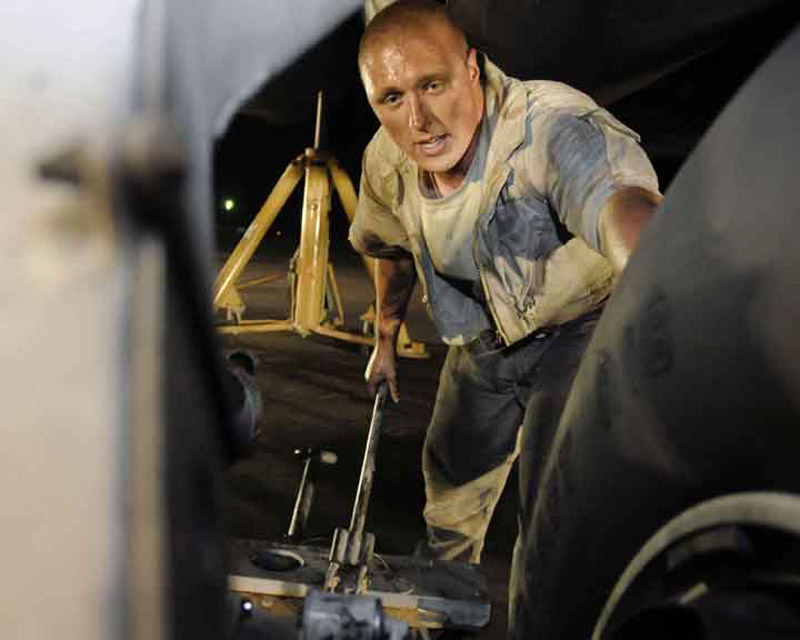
Nocturnal workers

Staff Sgt. David Nygaard jacks the B-1B Lancer's landing gear to change the brakes and tires May 29 in Southwest Asia. Sergeant Nygaard is a 37th Aircraft Maintenance Unit B-1B crew chief deployed from Ellsworth Air Force Base, S.D.